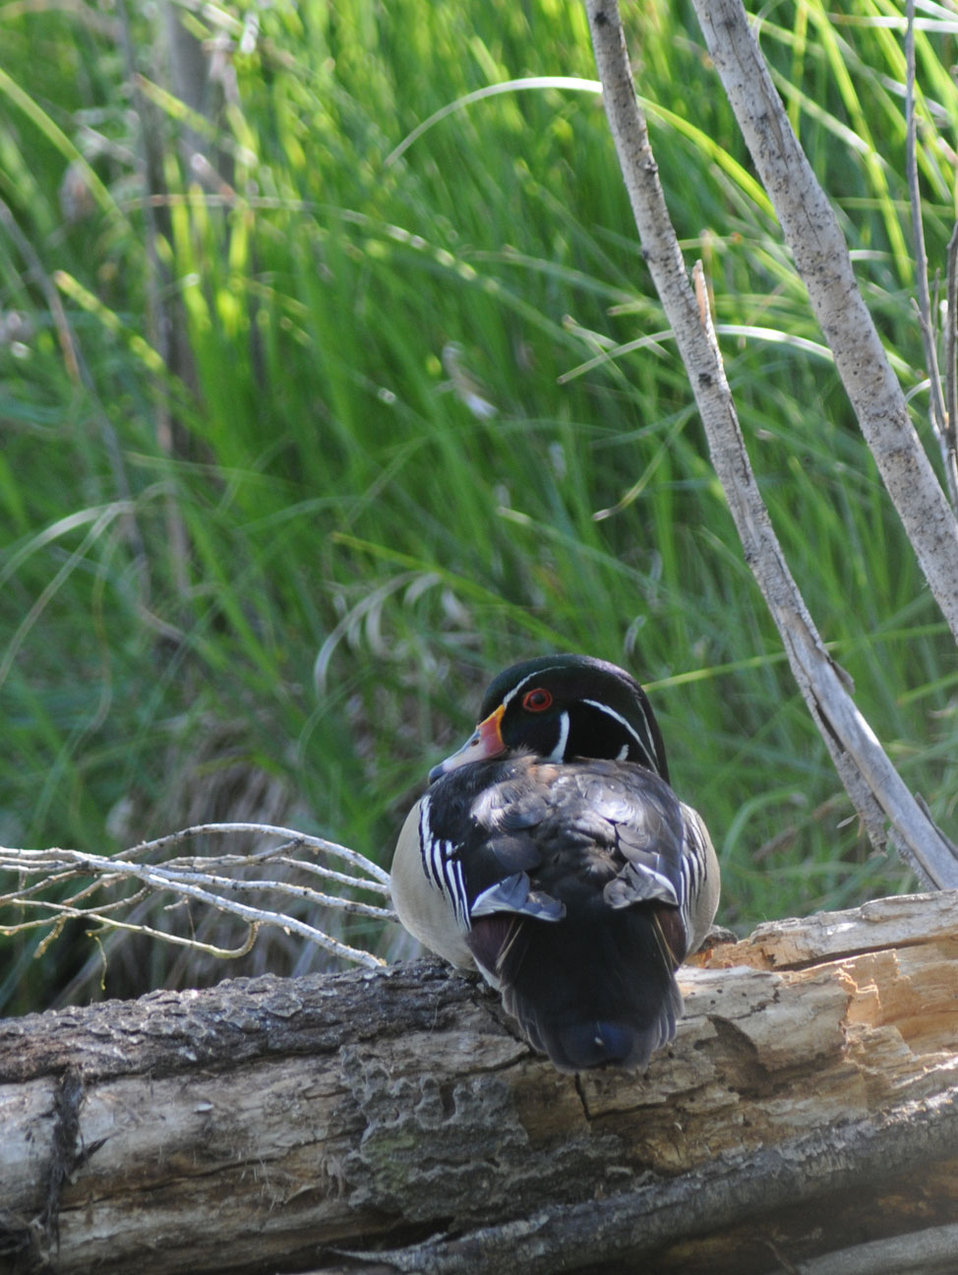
Wood Duck - Two Ponds